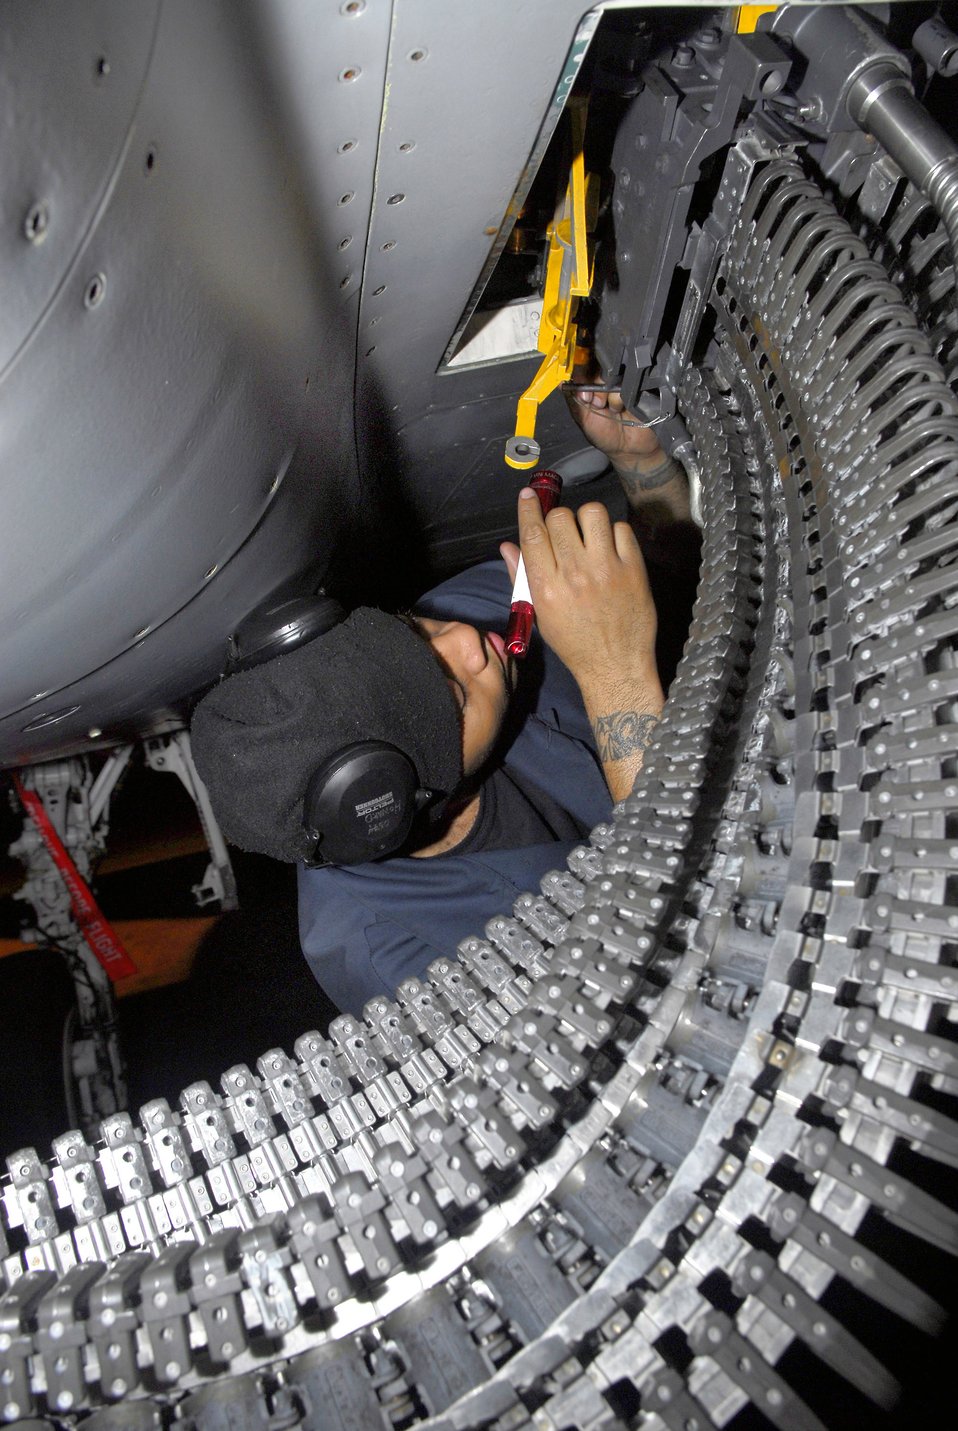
Round and round

During an operational readiness inspection, Staff Sgt. J.T. Howard watches munitions load into an F-15 Eagle March 10 at Kadena Air Base, Japan. Pacific Air Forces is conducting the inspection this month to validate the mission readiness of the 18th Wing.